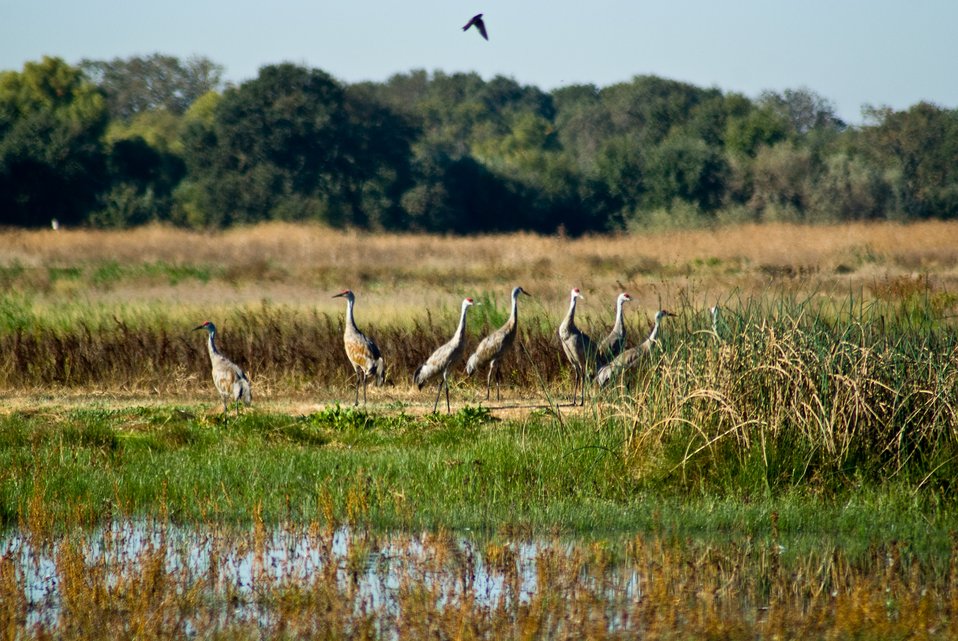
Sandhill cranes at Stone Lakes NWR

The Stone Lakes National Wildlife Refuge is south of Sacramento in the northern reaches of the Sacramento-San Joaquin River Delta. FWS staff and partners have been working to restore historic wetland communities and enhance existing habitats in the 6,000-acre complex of wetland, riparian and grassland habitats. Stone Lakes NWR provides wintering and migrating habitat for waterfowl, shorebirds and sandhill cranes each year, as well as breeding habitat for wood ducks, mallards and cinnamon teal.